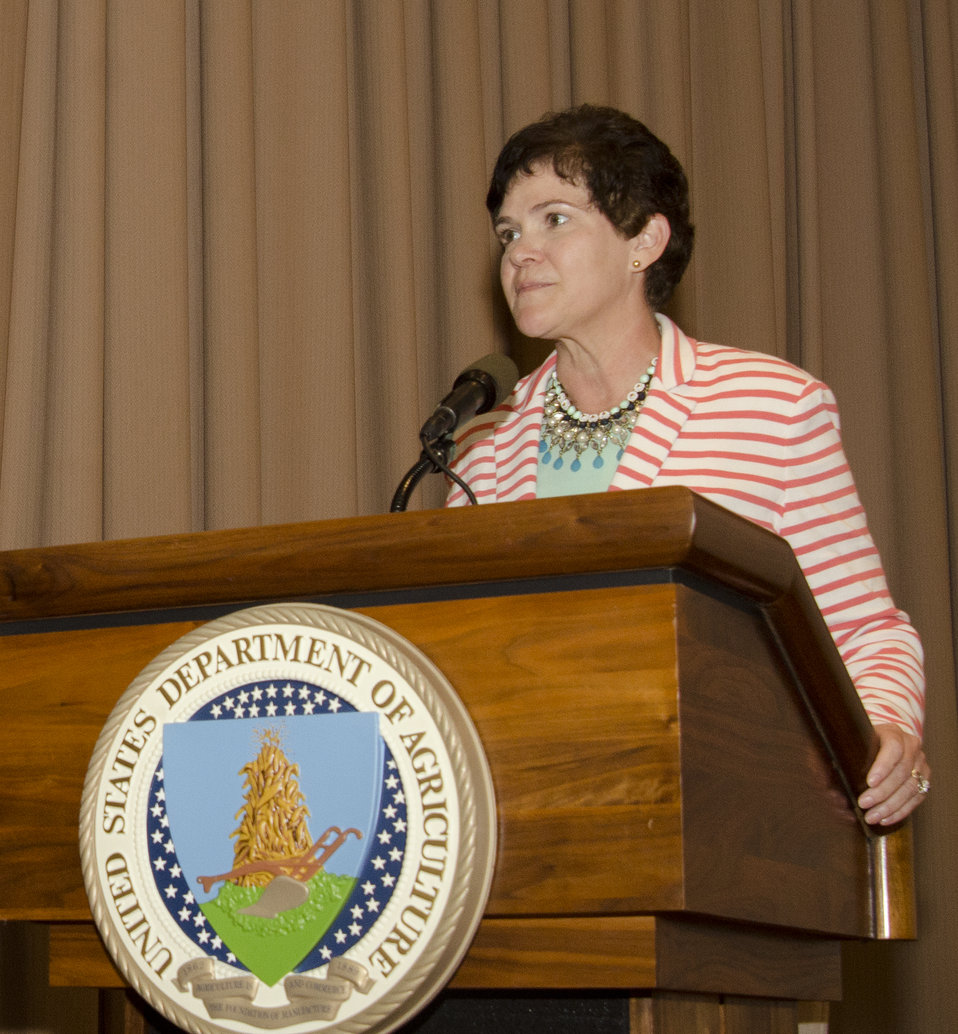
Deputy Secretary of Agriculture Krysta Harden speaks at the Womens Equality Day ceremonies held in the Jefferson Auditorium at the U.S. Department of Agriculture (USDA)in Washington, D.C. on Thursday, Aug. 22, 2013.